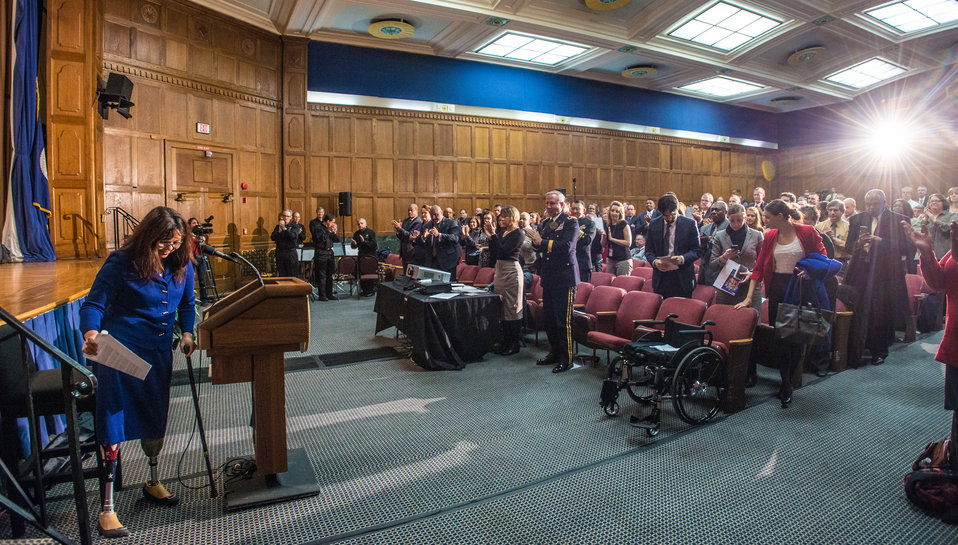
U.S. Congresswoman Tammy Duckworth (D-Ill.) receives a standing ovation for her keynote address at the 2013 U.S. Department of Agriculture (USDA), Veterans’ Day Observance, whose theme is “VALOR, COURAGE, SACRIFICE – HONORING ALL WHO SERVED,” in Washington, DC, on Wednesday, November 20, 2013. Congresswoman Tammy Duckworth is an Iraq War Veteran and former Assistant Secretary of Veterans Affairs. In 2004, Duckworth was deployed to Iraq as a Blackhawk helicopter pilot for the Illinois Army National Guard. She was one of the first Army women to fly combat missions during Operation Iraqi Freedom. Her Blackhawk helicopter was hit by an RPG (Rocket Propelled Grenade) on November 12, 2004 resulting in Duckworth losing her legs and partial use of her right arm in the explosion. She was awarded a Purple Heart for her combat injuries. Duckworth declined a military medical retirement and continues to serve as a Lieutenant Colonel in the Illinois Army National Guard.